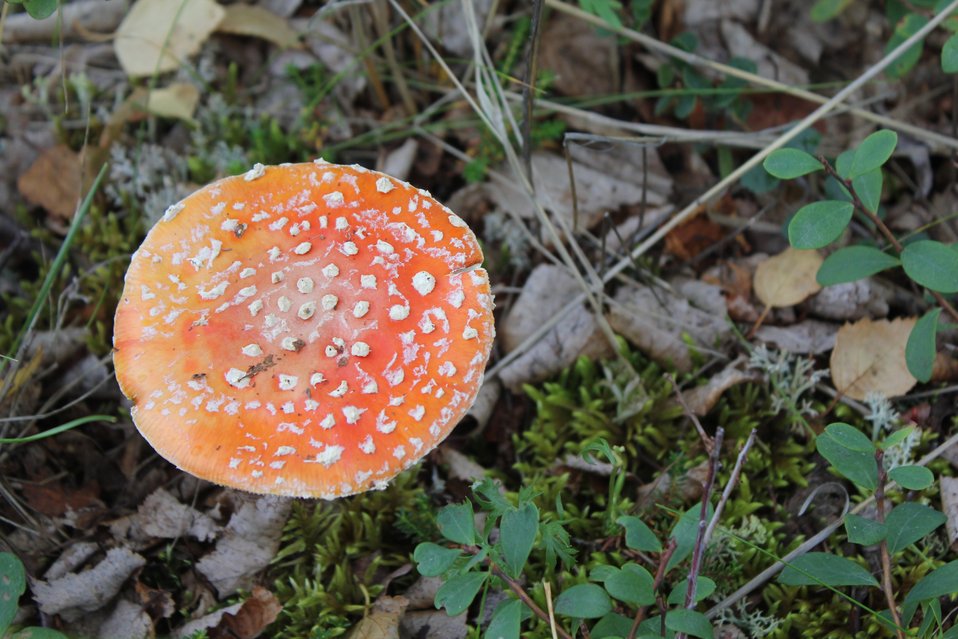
Mushroom (Amanita muscaria) famed for its hallucogenic properties. Can be toxic.